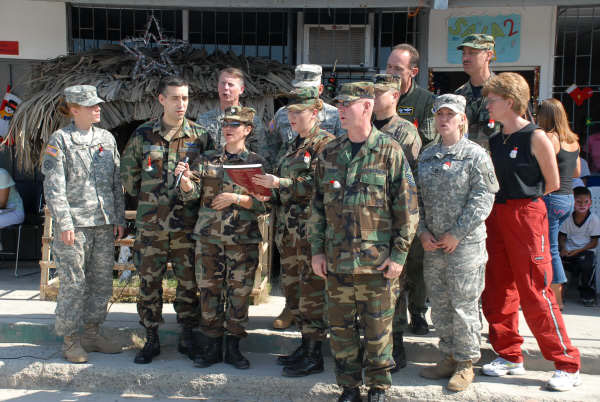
Commander brings holiday cheer to Ecuadorian schools

A group of U.S. Southern Command servicemembers, including deputy commander Lt. Gen. Glenn F. Spears and Army Command Sgt. Maj. Michael Balch were joined Dec. 11 by Airman from Forward Operating Location Manta, in singing Christmas carols to the students of the Angelica Flores School for the Disabled in Manta, Ecuador. The group was there to present certificates pledging money for repairs and school supplies to the schoool.